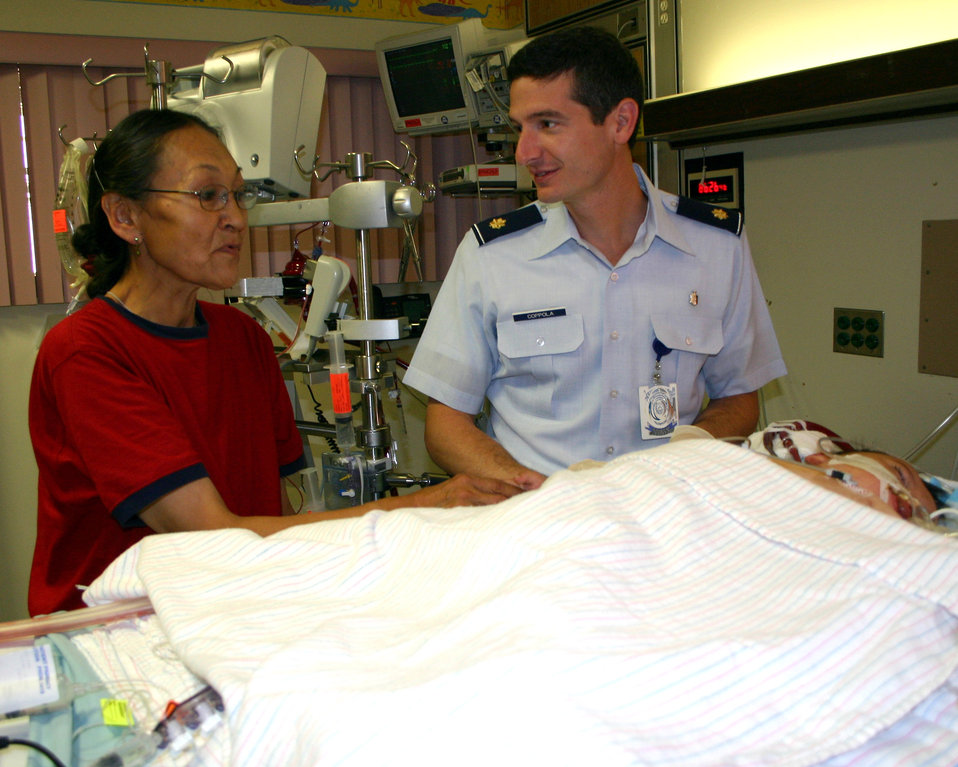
Rescue missions save another Alaskan child

LACKLAND AIR FORCE BASE, Texas -- Maj. (Dr.) Christopher Coppola and Dora Hill discuss her son's status at Wilford Hall Medical Center. Dr. Coppola, a pediatric surgeon with the 859th Surgical Operations Squadron, was part of the team that flew to Anchorage, Alaska, on Aug. 14, in an attempt to save Michael's life.